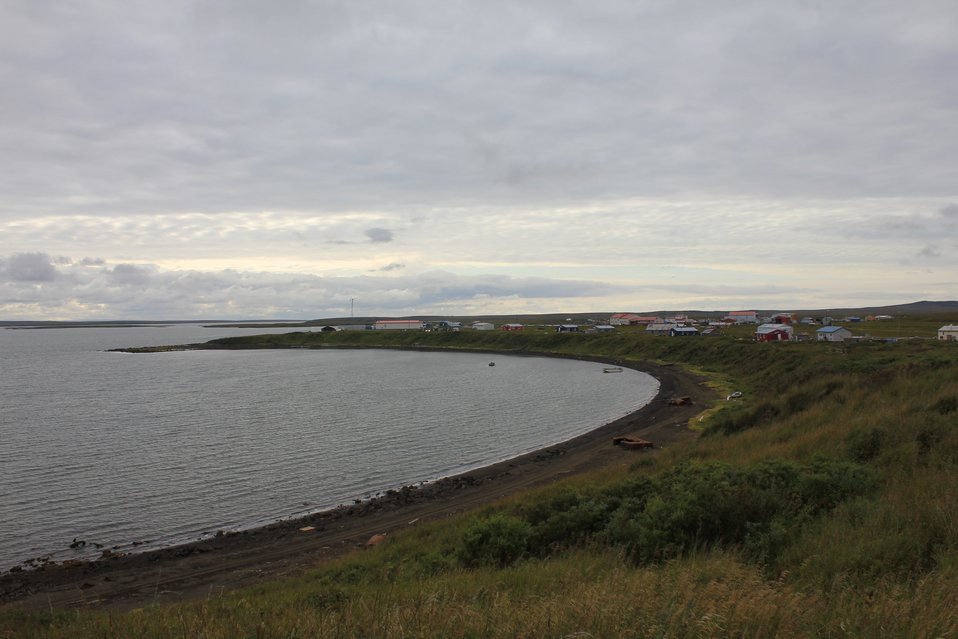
A view of St. Michael.